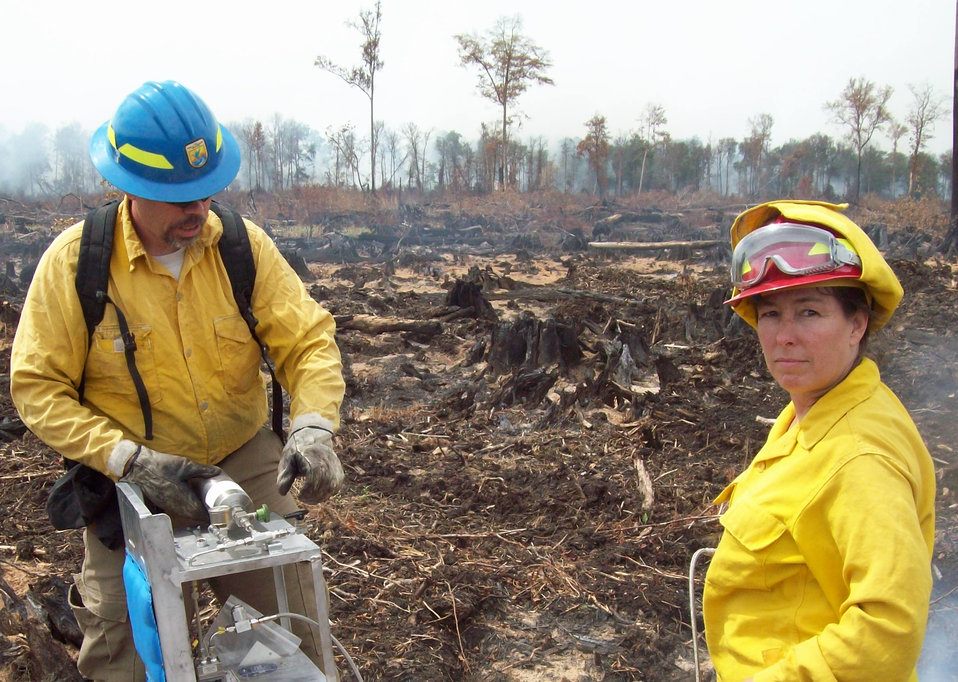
Sampling Smoke with NASA scientist

Suffolk, VA, August, 2011: Mike Dueitt, Incident Commander of the Southern Area Type 2 Incident Management Team helps Dr. Amber Soja of the NASA Langley Research Center collect a sample of peat smoke at the Lateral West Fire burning on Great Dismal Swamp National Wildlife Refuge. Dr. Soja's research includes the effect of climate change on fire.